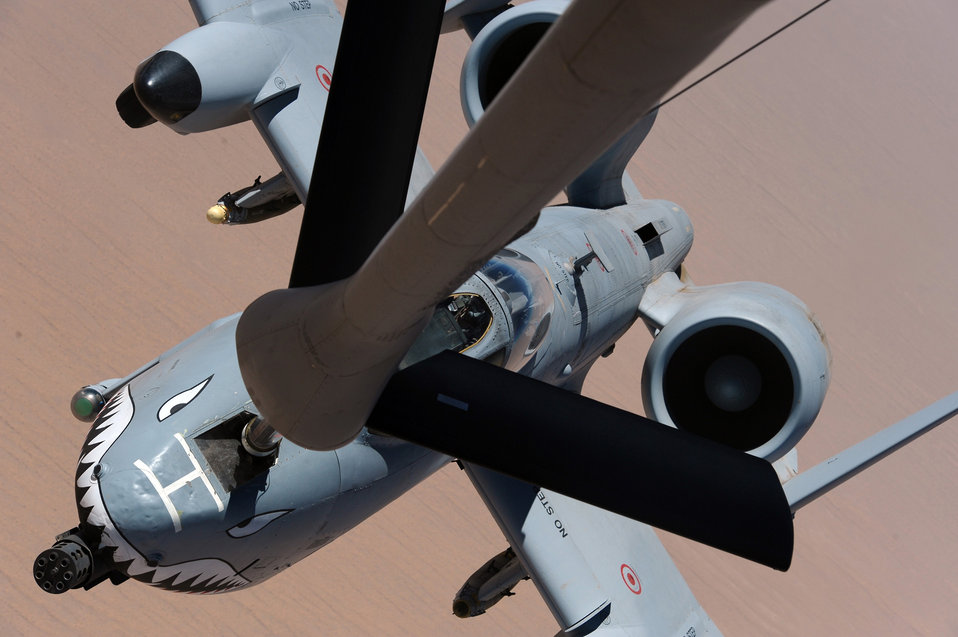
Operation Enduring Freedom Air Refueling Mission

An A-10 Thunderbolt II receives fuel from a KC-135 Stratotanker May 8, 2011, above Afghanistan.